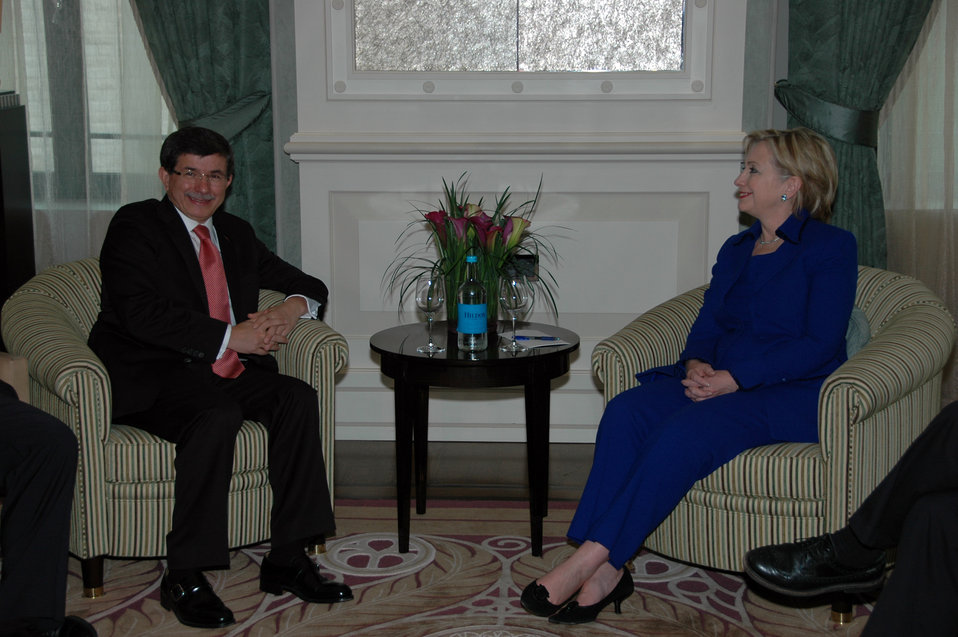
Secretary Clinton Meets With Turkish Foreign Minister

U.S. Secretary of State Hillary Rodham Clinton with Turkish Foreign Minister Ahmet Davutoglu in Zurich, Switzerland October 9, 2009.